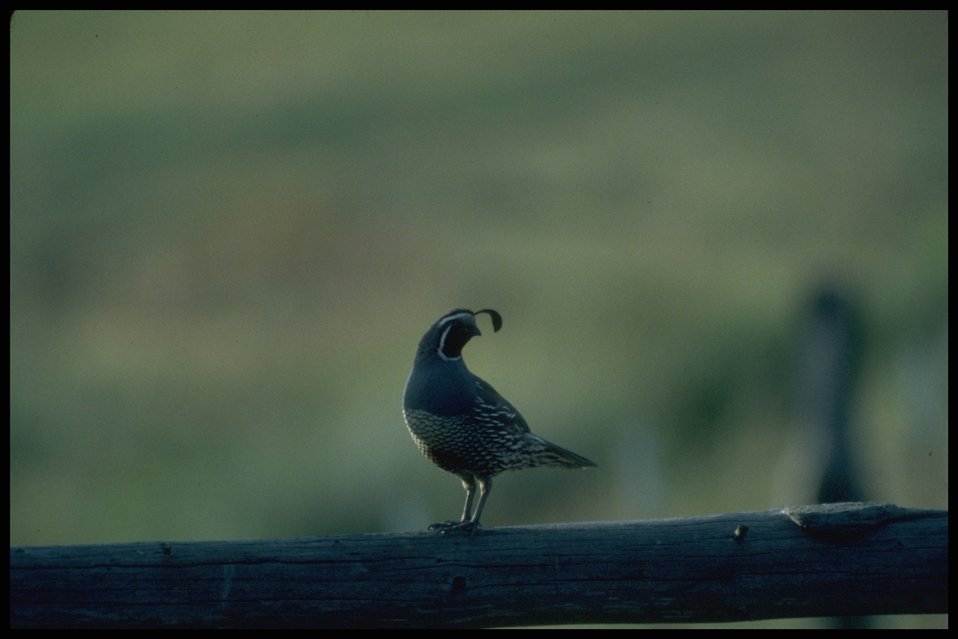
California Quail, Lakeview District.